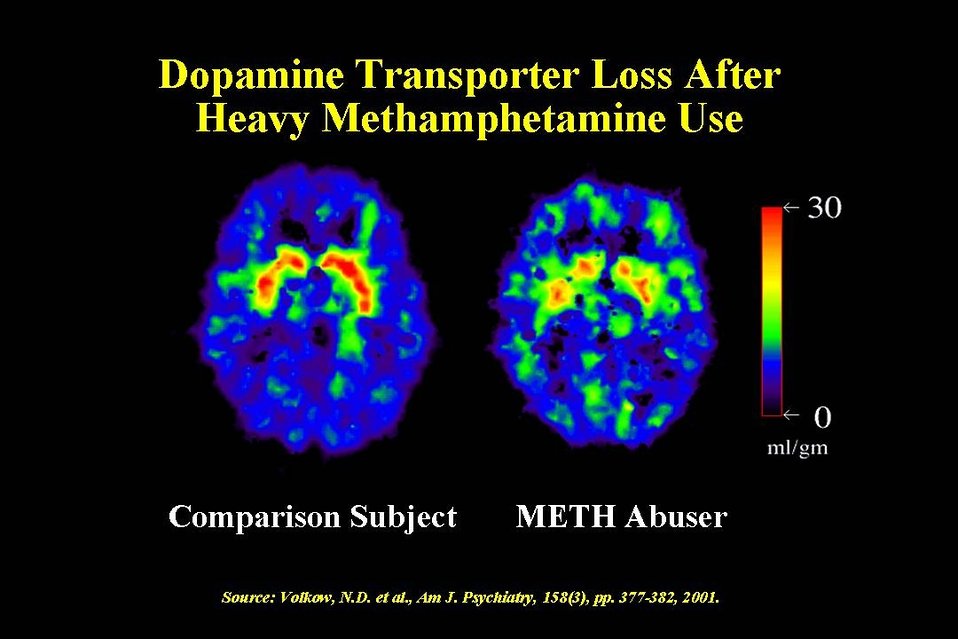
Dopamine Transporter

Chronic methamphetamine abusers have significant reductions in the level of dopamine transporters.